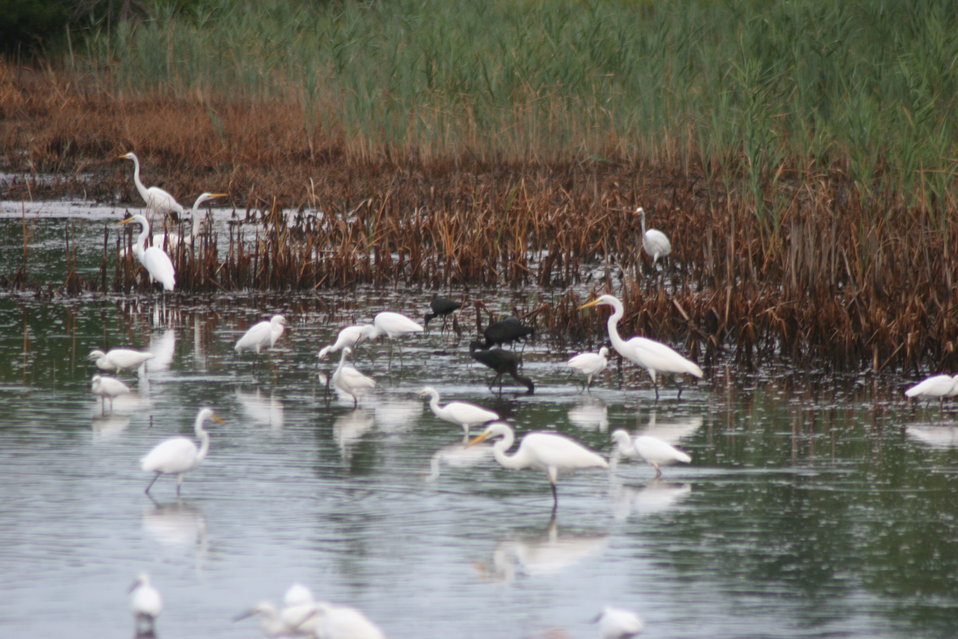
Egrets and Ibis